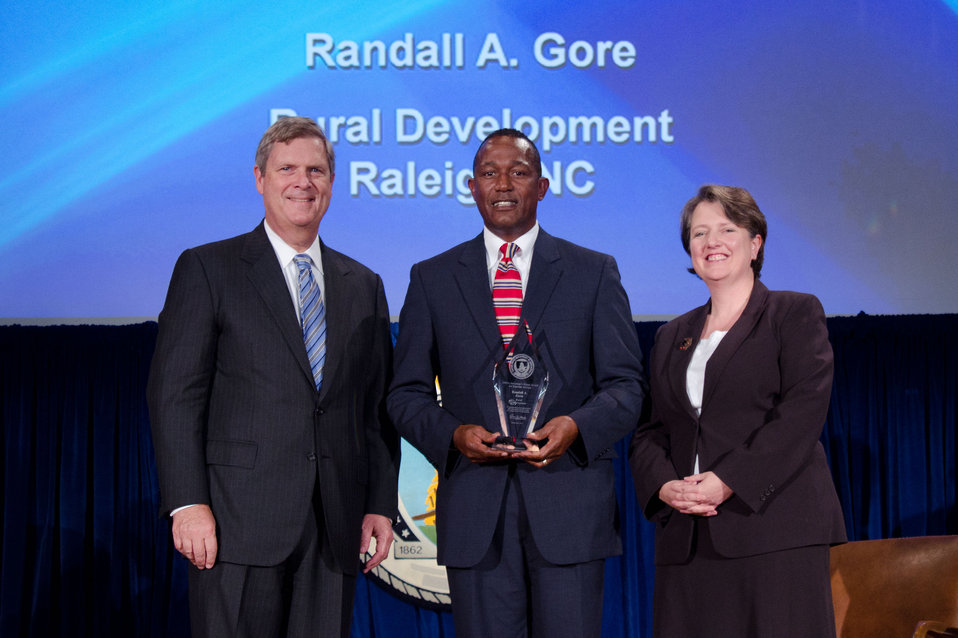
Agriculture Secretary Tom Vilsack (l) and Deputy Secretary Kathleen Merrigan (r), presents the Assisting, Rural Communities To Create Prosperity So They are Self-Sustaining, Repopulating, and Economically Thriving Award to Randall A. Gore, Rural Development, Raleigh, NC. In recognition of your outstanding leadership in implementing Rural Development’s Programs and the American Recovery and Reinvestment Act and Creating Economic Growth and development in Rural communities. On Wednesday, September 14, 2011 in the Jefferson Auditorium at the US Department of Agriculture in Washington, DC.